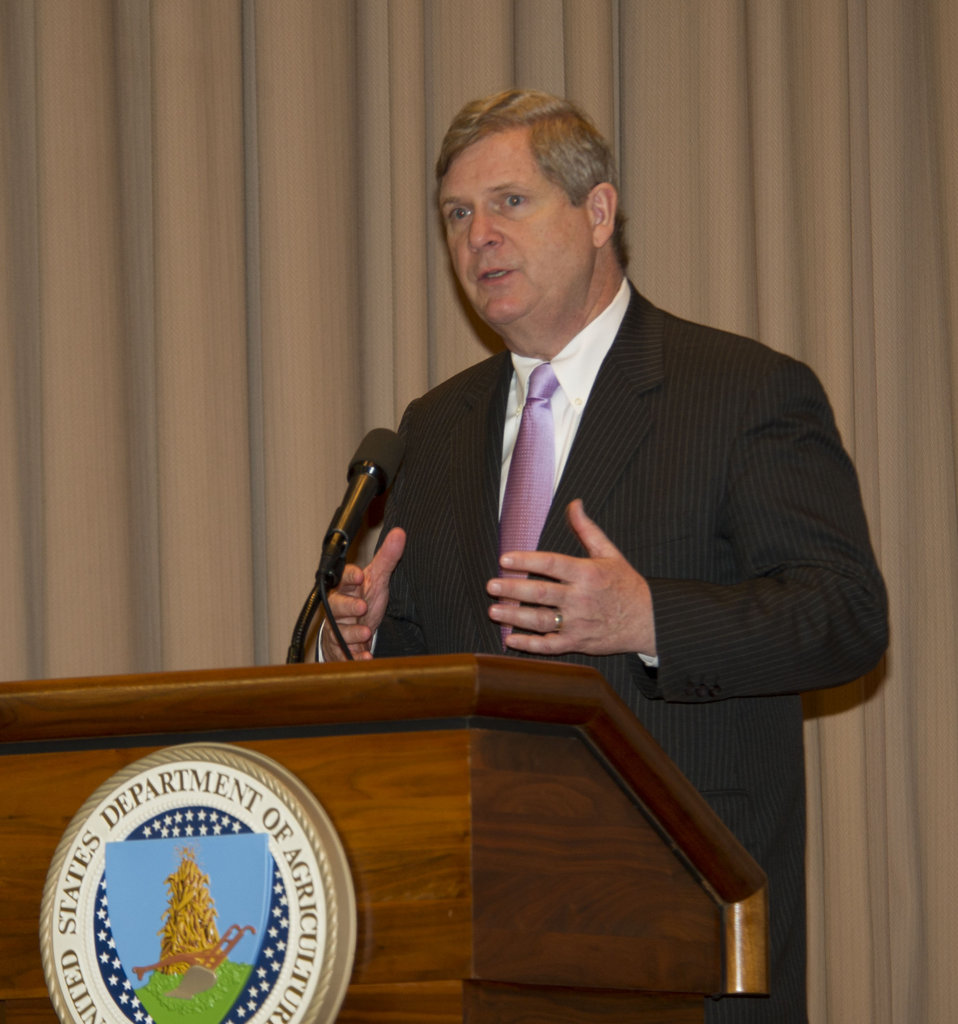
Agricluture Secretary Tom Vilsack speaking at the U.S. Department of Agricuture Black History Month Observance on Feb. 21, 2013, in the Jefferson Auditioirum at the USDA in Washington, DC.